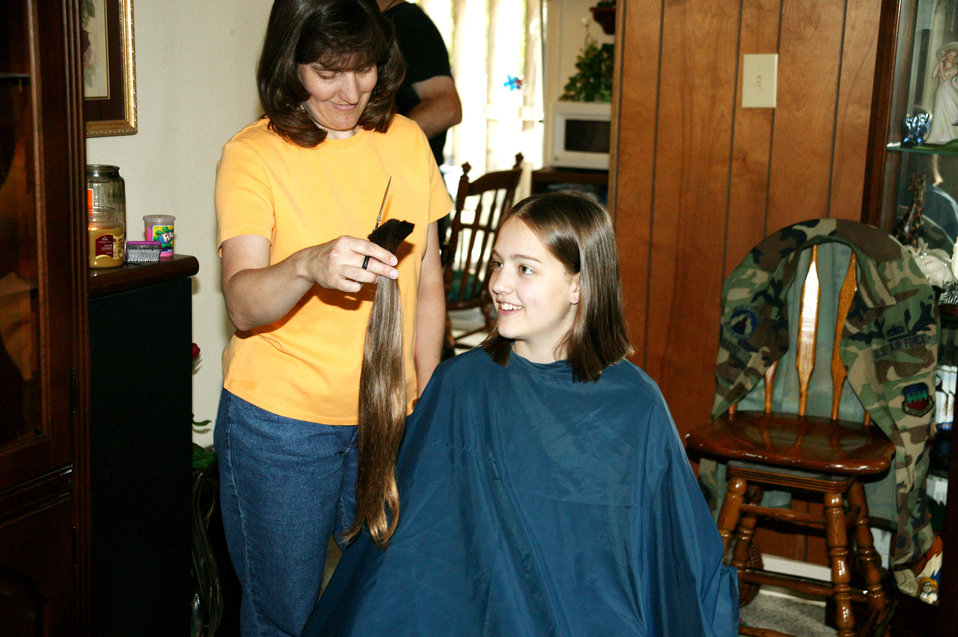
Mother, daughters share 'Locks of Love'

Bethany McCause looks at her 18-inch ponytail moments after it was cut on Friday, June 2, 2006. This was Bethany's first-ever haircut. She donated the ponytail to Locks of Love, a nonprofit organization that takes donated hair and turns it into hairpieces for financially disadvantaged children who suffer hair loss from long-term medical care. Bethany's father is Tech. Sgt. Bruce McCause of the 20th Component Maintenance Squadron at Shaw Air Force Base, S.C.